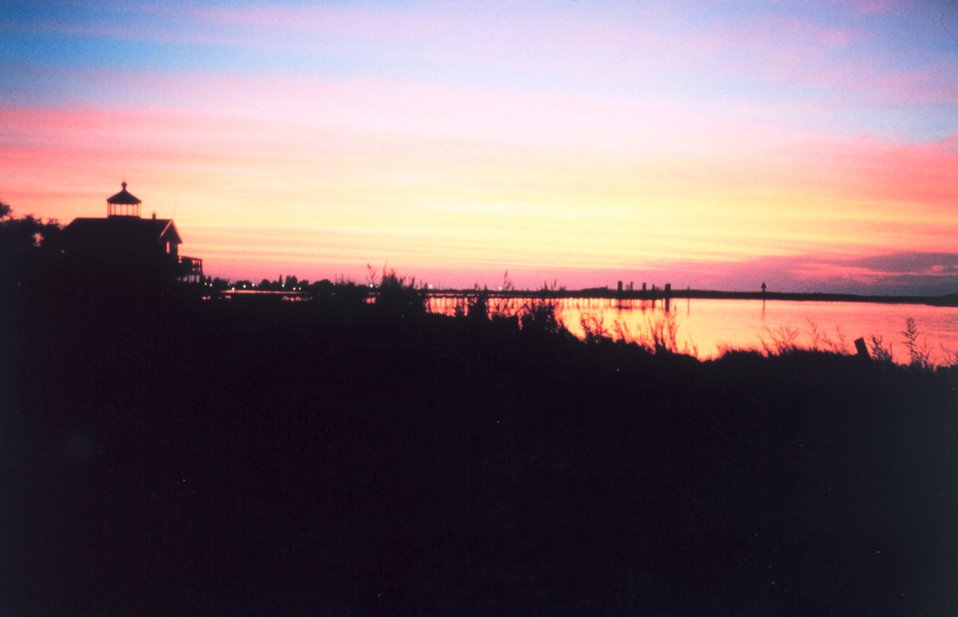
Sunset over Chesapeake Bay from Port Isobel